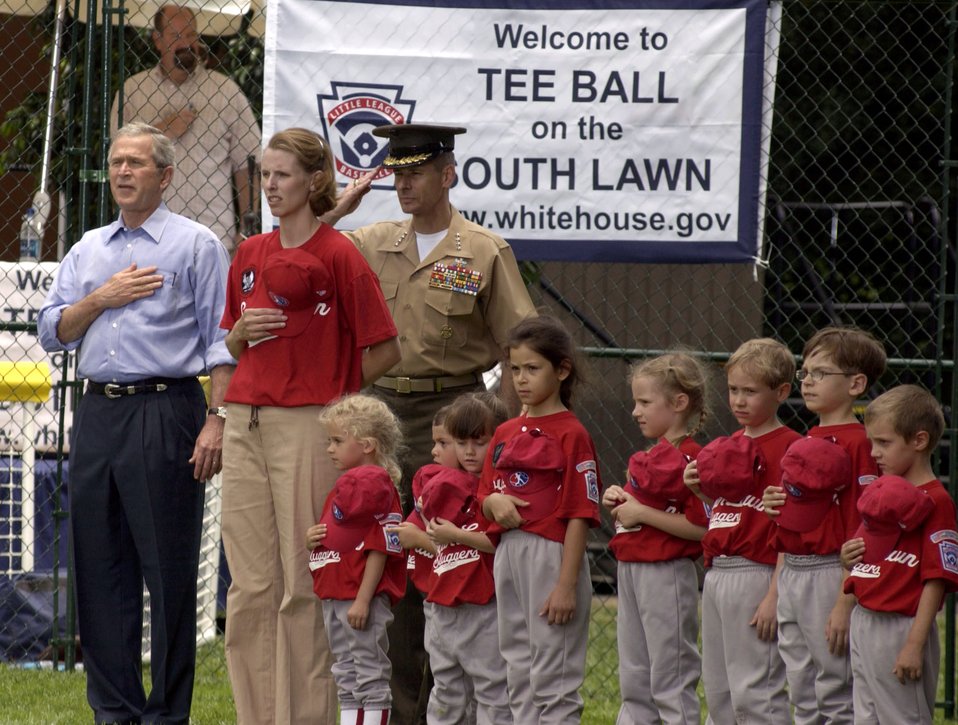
Tee ball on the South Lawn

President George W. Bush, Danielle McPeak, Gen. Peter Pace, chairman of the Joint Chiefs of Staff and the Yankees Little League team from McGuire Air Force Base, N.J., stand during the National Anthem on the South Lawn of the White House on Friday, June 23. The ceremony marked the official start of the Little League season. Ms. McPeak is manager of the McGuire team.